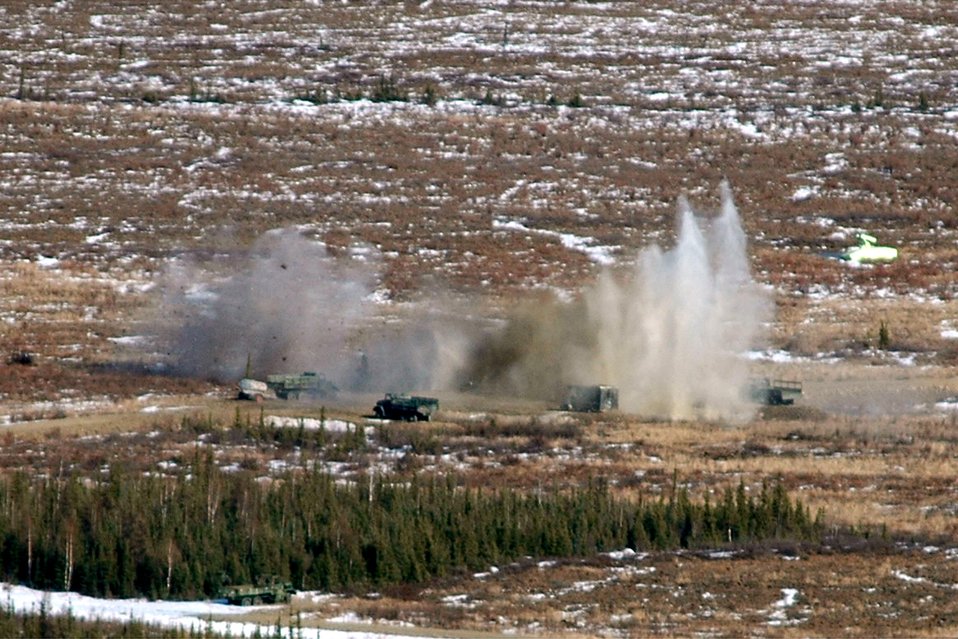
Red Flag-Alaska wraps up

An A-10 Thunderbolt II pilot strafes a